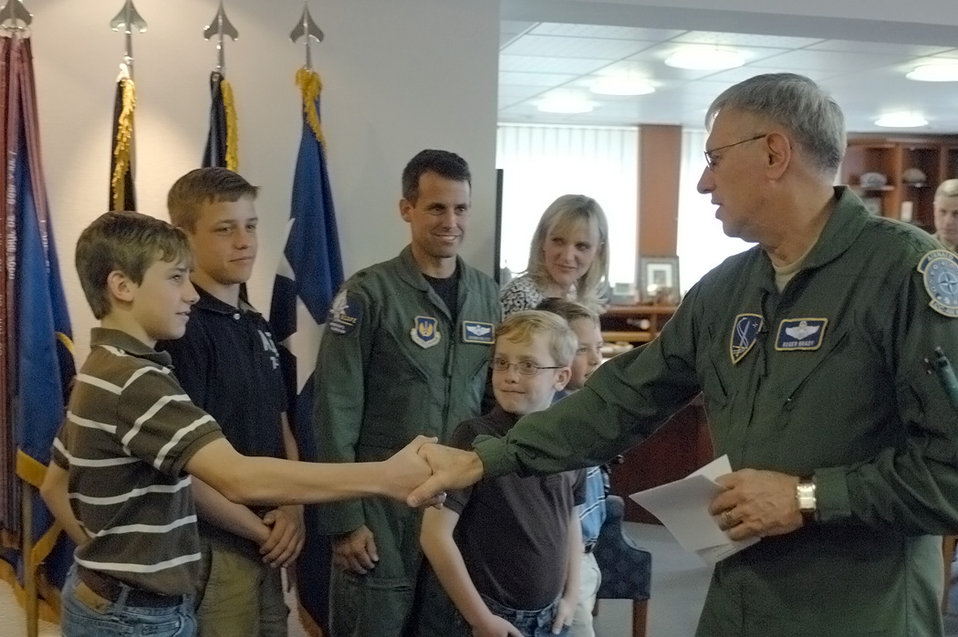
Ramstein youth wins Air Force video competition

Gen. Roger Brady shakes hands with Hunter Koltes, 13, before announcing Hunter won the Year of the Air Force Family video competition, April 21, 2010, at Ramstein Air Force Base, Germany. General Brady congratulated Hunter and presented him a $2,000 gift check toward the purchase of a computer and video camera and a commander's coin for his tribute video called,